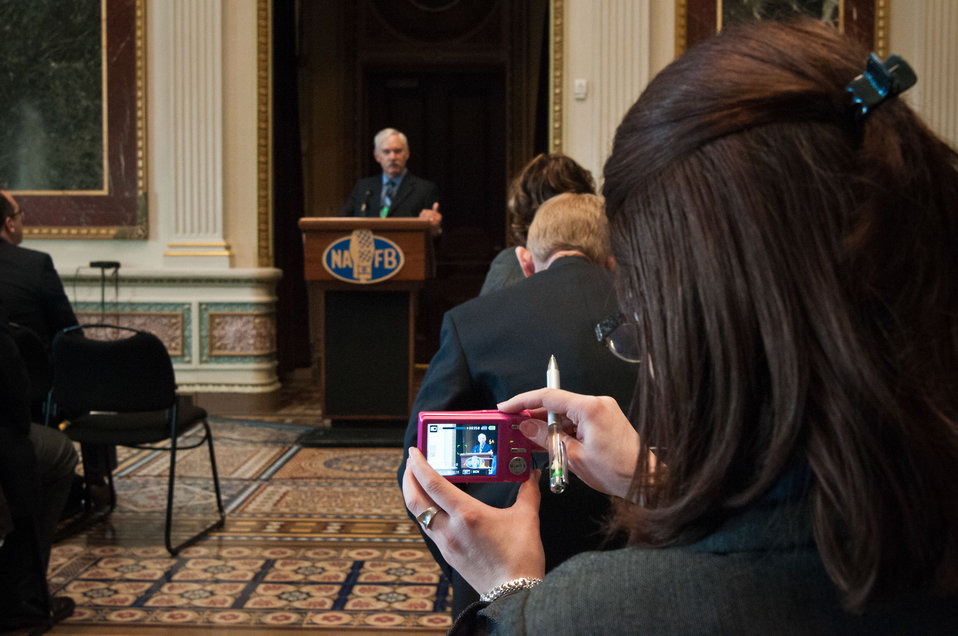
Leslie Smith, KNEB, Scottsbluff, Nebraska photographs Farm and Foreign Agricultural Acting Under Secretary Michael Scuse during the Spring National Association of Farm Broadcasters (NAFB), “Washington Watch” member retreat in Washington, D.C. This year the meeting was held in the Eisenhower Executive Office Building, Indian Treaty Room on Tuesday, April 24, 2012, featuring United Sates Department of Agriculture and Obama Administration officials. This opportunity provides an occasion to highlight efforts to rebuild and revitalize rural America, including efforts for the agricultural community. NAFB is the recognized and trusted source of agricultural and rural lifestyle information for America with approximately 200 members who broadcast via radio in nearly every state in the country.